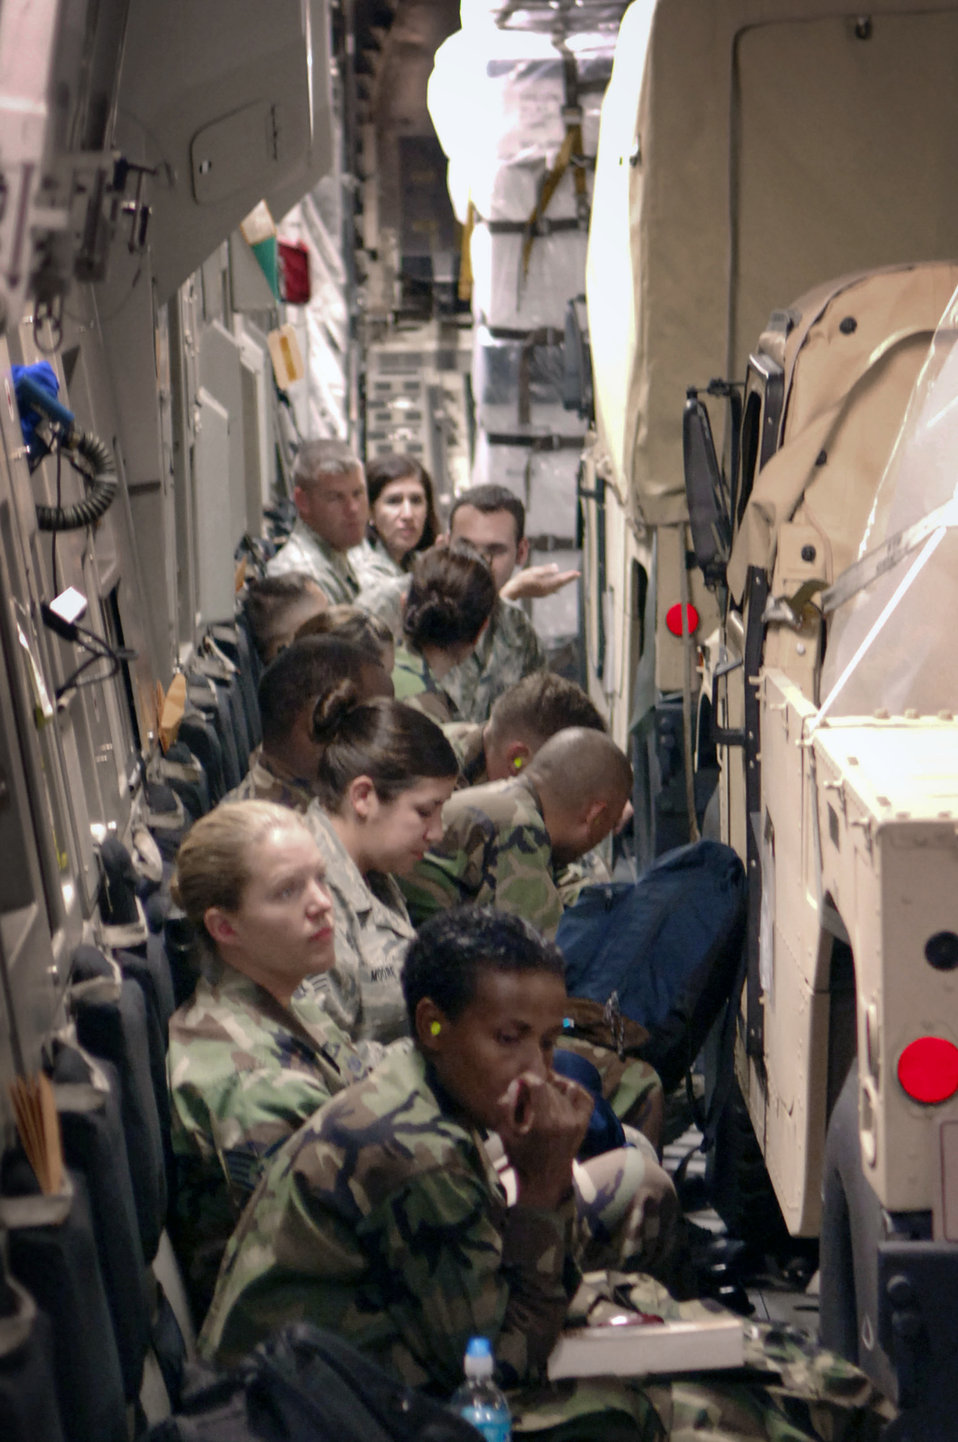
Hurricane Gustav

Members of the 6th Medical Group Mobile Aeromedical Staging Facility team, MacDill Air Force Base, Fla. plan for operations in route to Beaumont, Texas. The team deployed to assist in preparation for Hurricane Gustav evacuations.